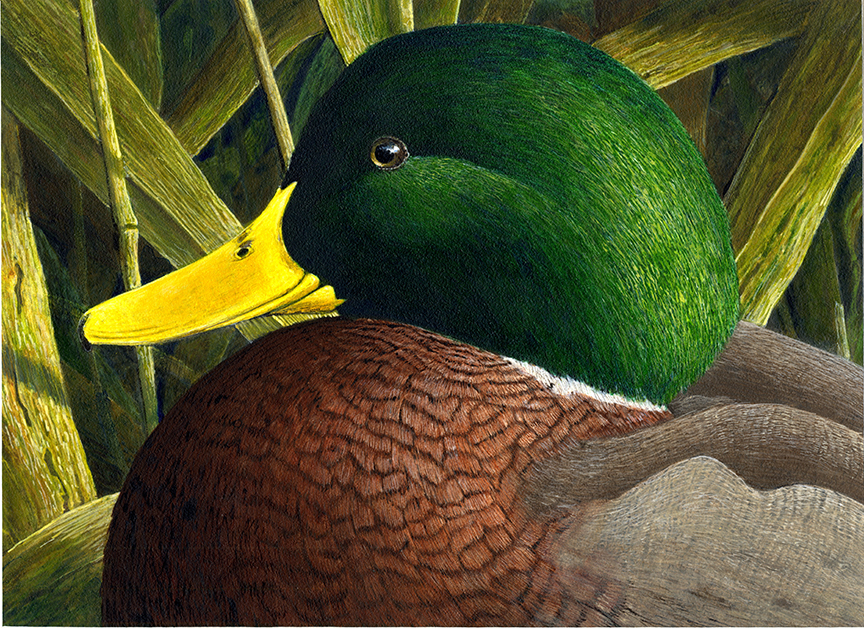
JRDuck2013LA

2013 Junior Duck Stamp Best of Show-Louisiana